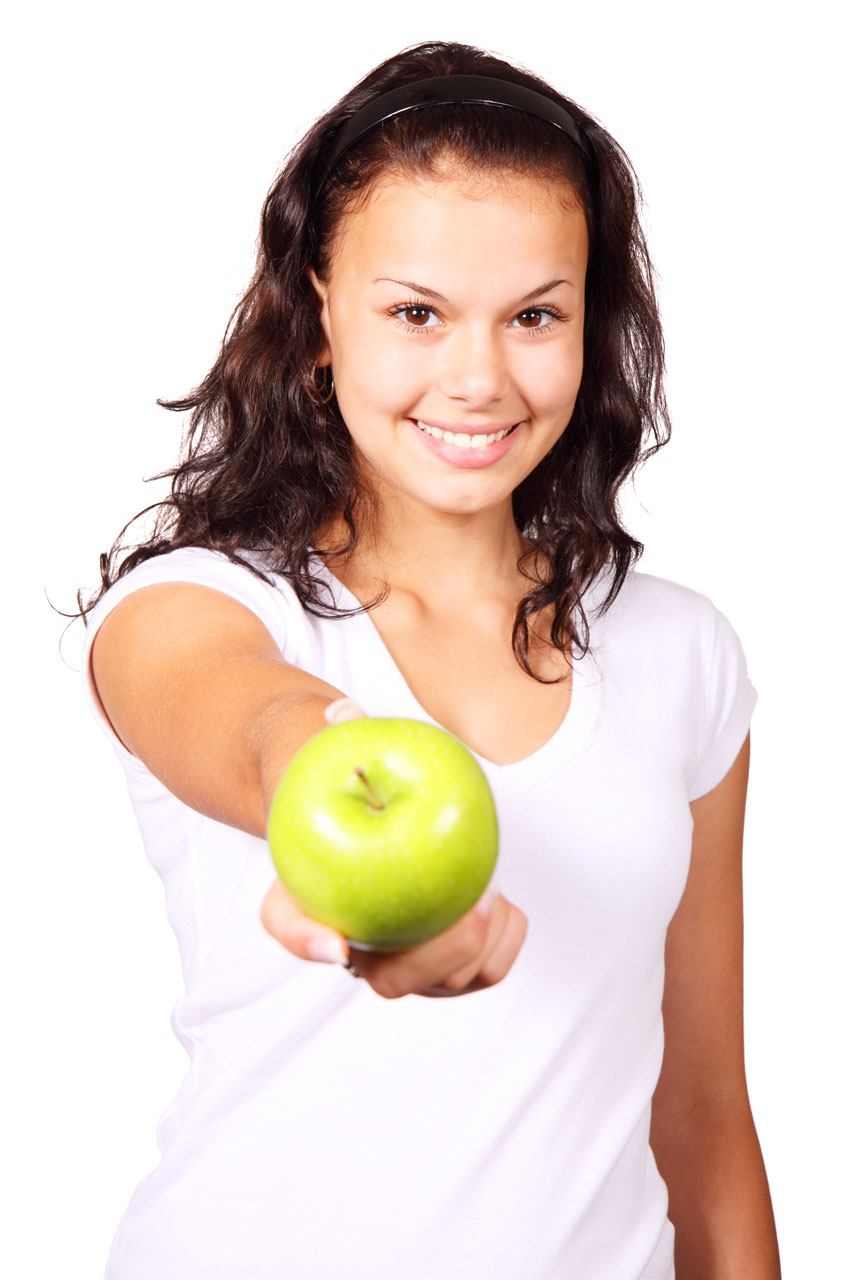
Girl holding apple

Young woman offering an apple.